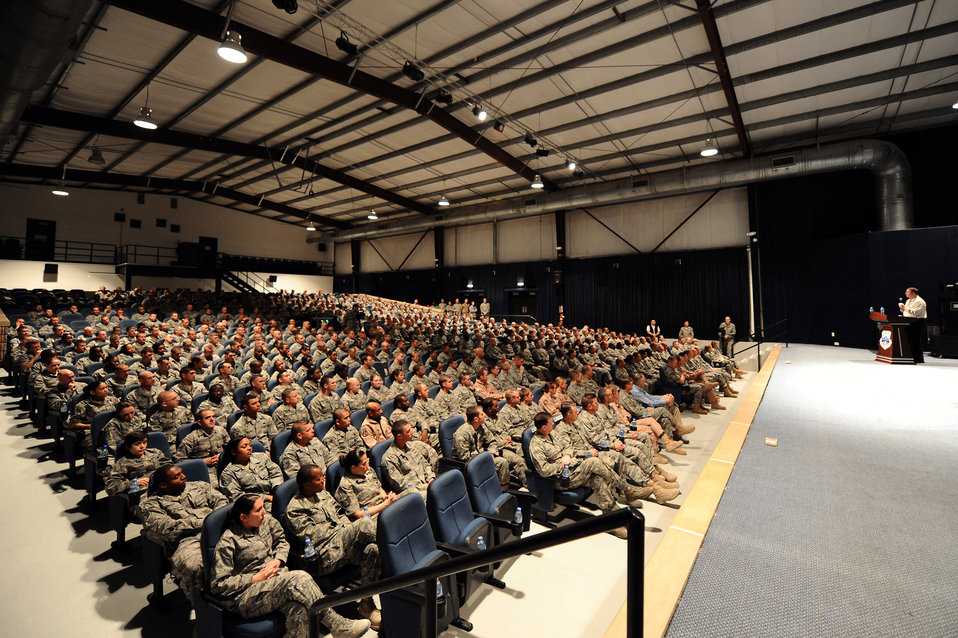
Secretary visits Southwest Asia, outlines Air Force priorities

Secretary of the Air Force Michael Donley speaks to 379th Air Expeditionary Wing Airmen at the base theater during his visit Jan. 29, 2010, to a deployed location in Southwest Asia.